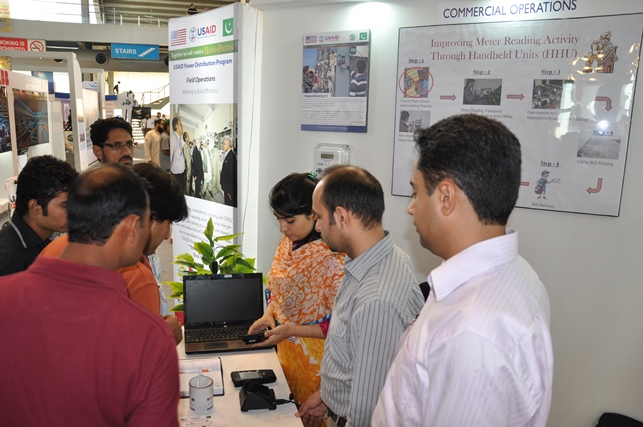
USAID participates in 11th International Pakistan Oil Gas Energy Exhibition

Visitors at the commercial stall